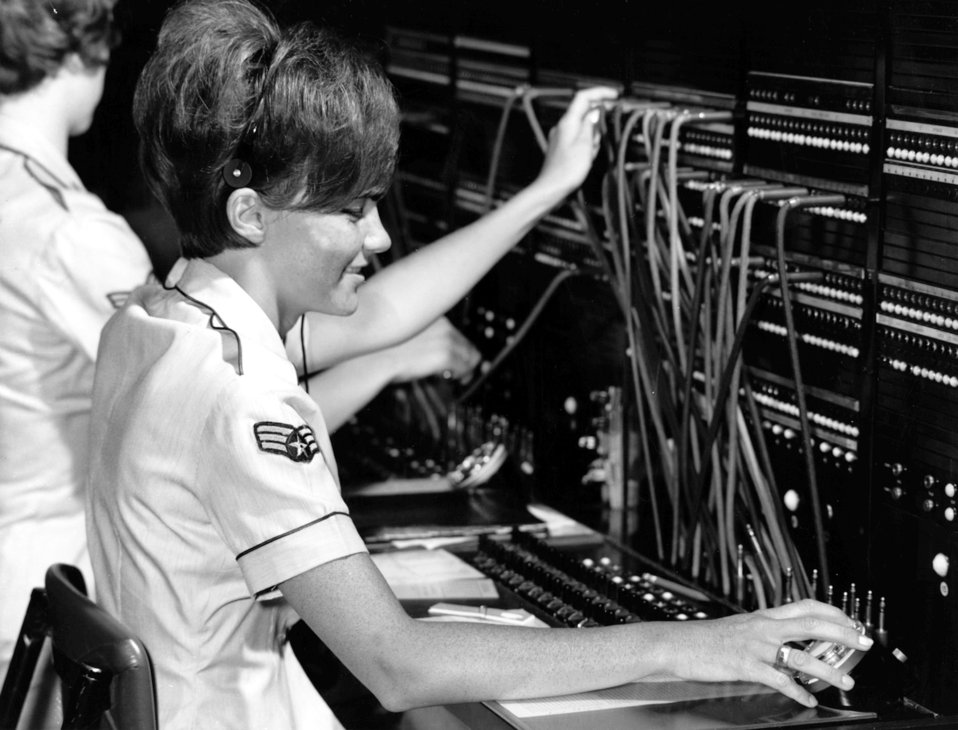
Airman operates switchboard

1960s -- U.S. Air Force Sgt. Suzann K. Harry, of Wildwood, N.J., operates a switchboard in the underground command post at Strategic Air Command headquarters, Offutt Air Force Base, Neb., in 1967.